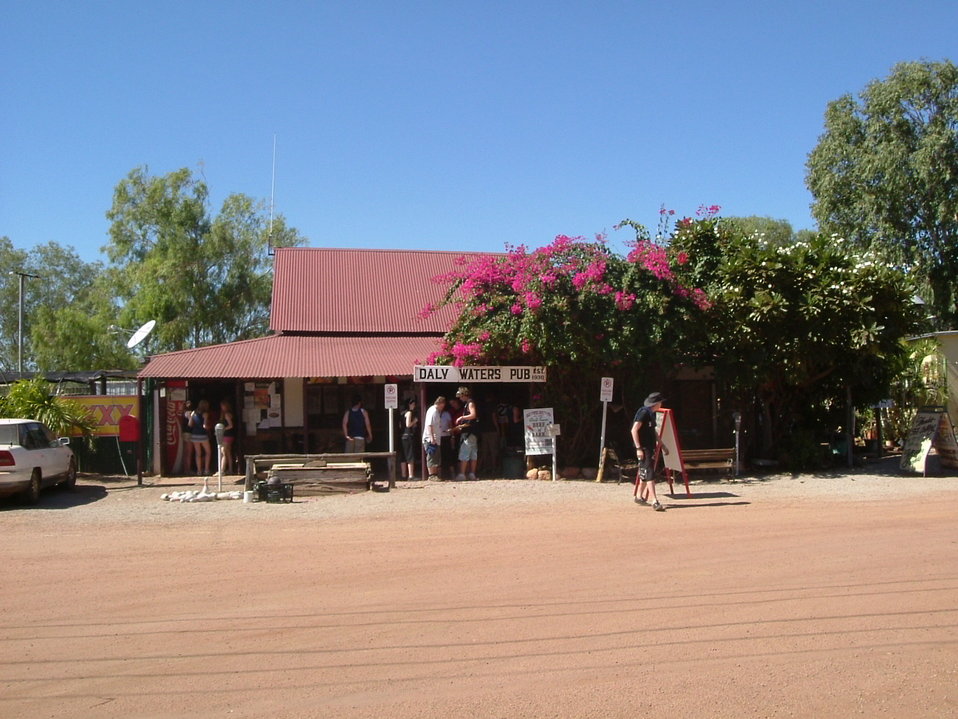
Daly Waters Pub